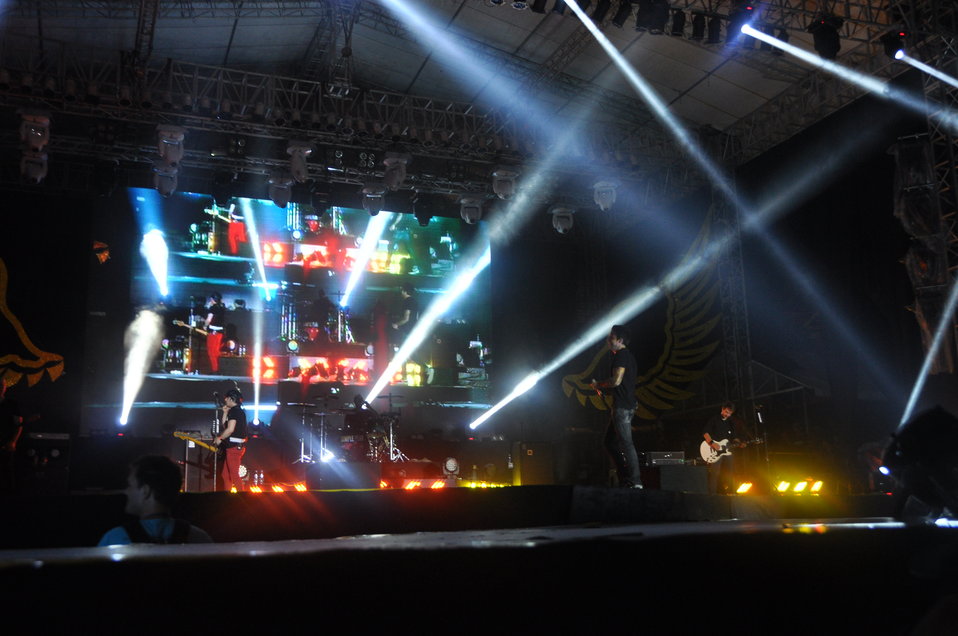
USAID co-sponors MTV EXIT concert in Hanoi against human trafficking

USAID co-sponsors MTV EXIT concert, campaign against human trafficking